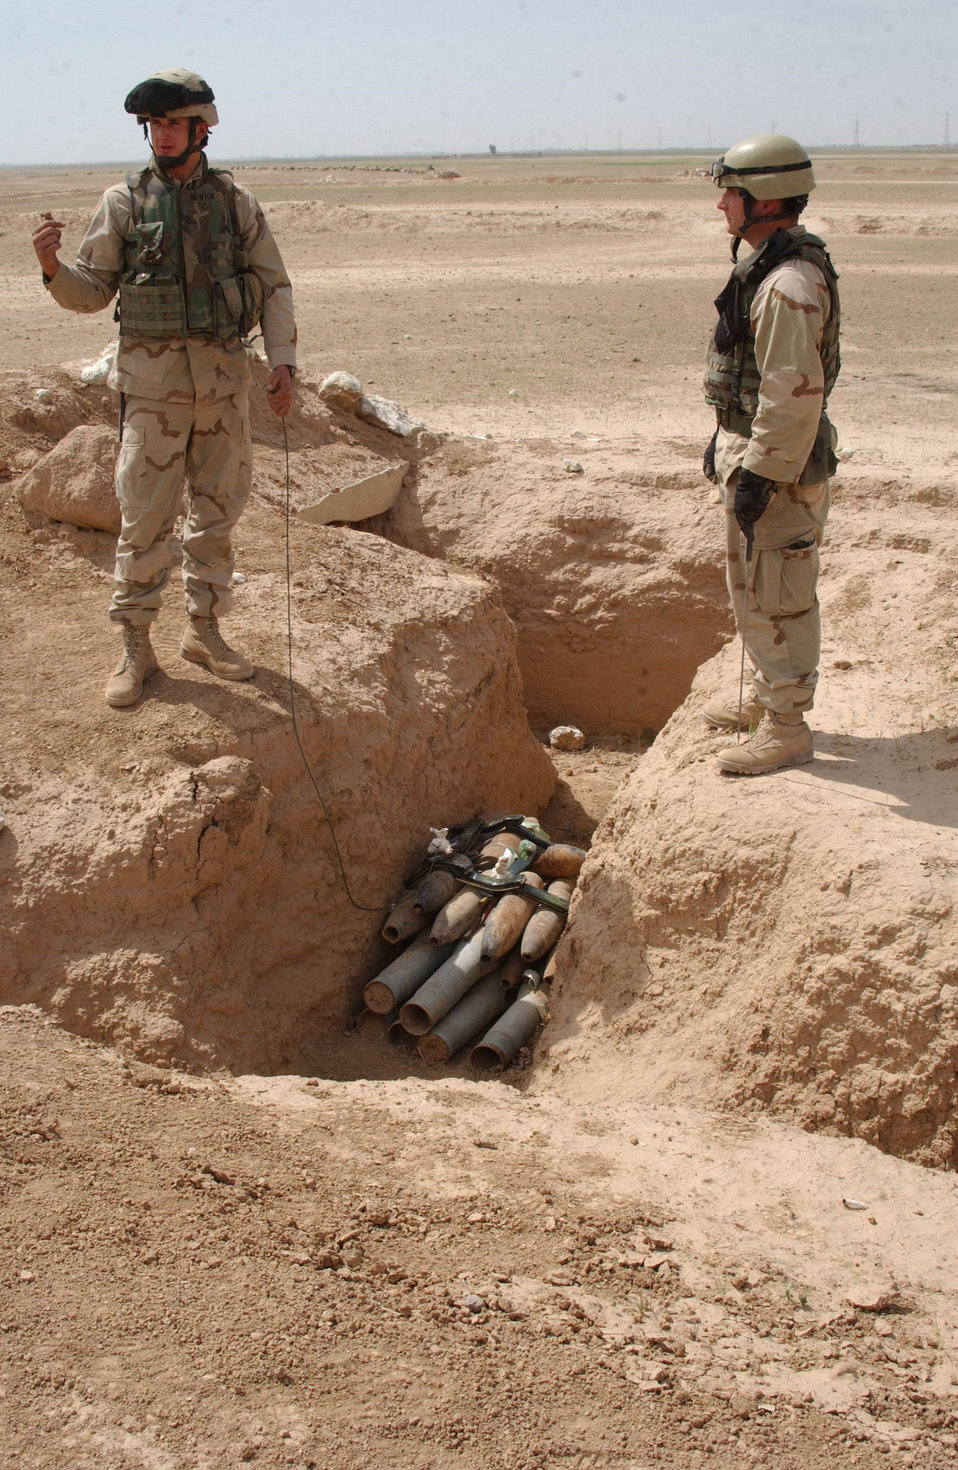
Blowing up the spot

TIKRIT AIRFIELD, Iraq -- An explosive ordnance disposal Airman and a U.S. Army Soldier prepare a charge to detonate unexploded ordnance that was found here April 13.